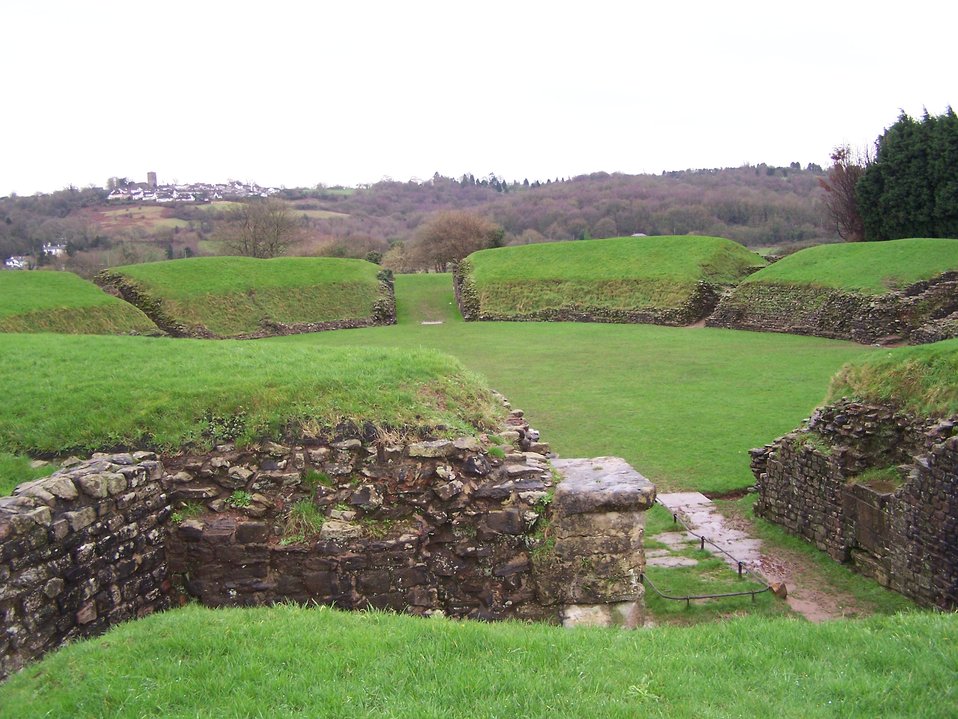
Photograph of the military amphitheatre at Caerleon.